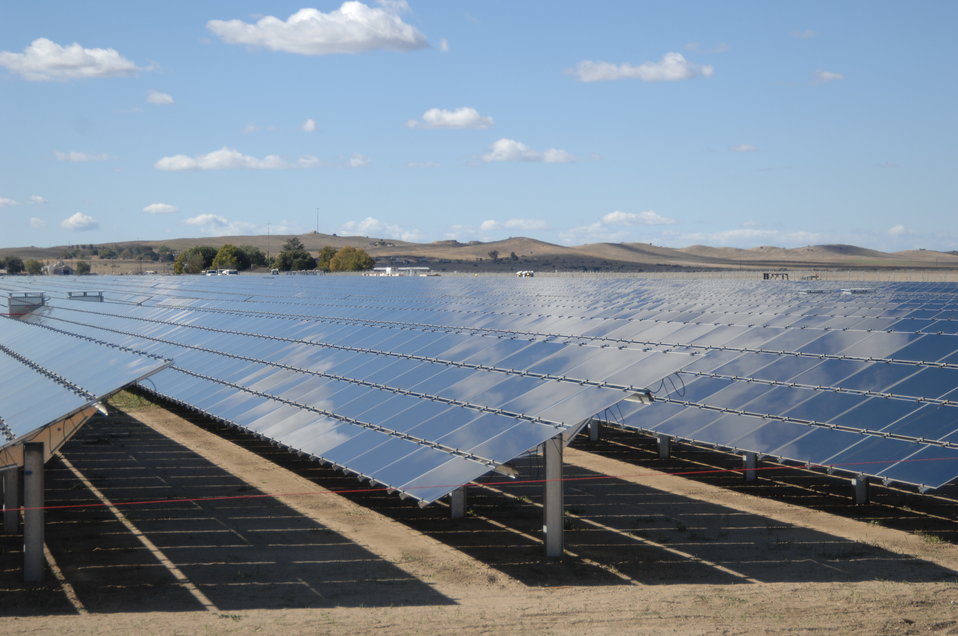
Solar Panels at Topaz Solar 1